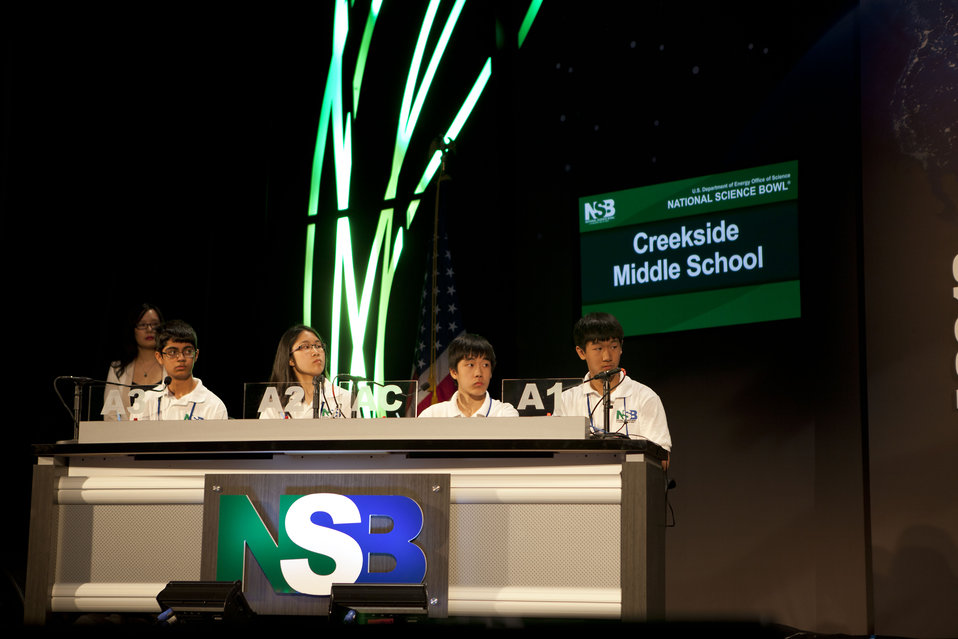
National Science Bowl 2013

Caleb He, left, Melissa Yap, Brendan Yap and Anthony Ji from Creekside Middle School in Carmel, Ind., compete in the final round of the 2013 National Science Bowl at the National Building Museum, Monday, April 29, 2013, in Washington, DC. Creekside Middle School beat Takoma Park Middle School in the 2013 National Science Bowl Championship match.